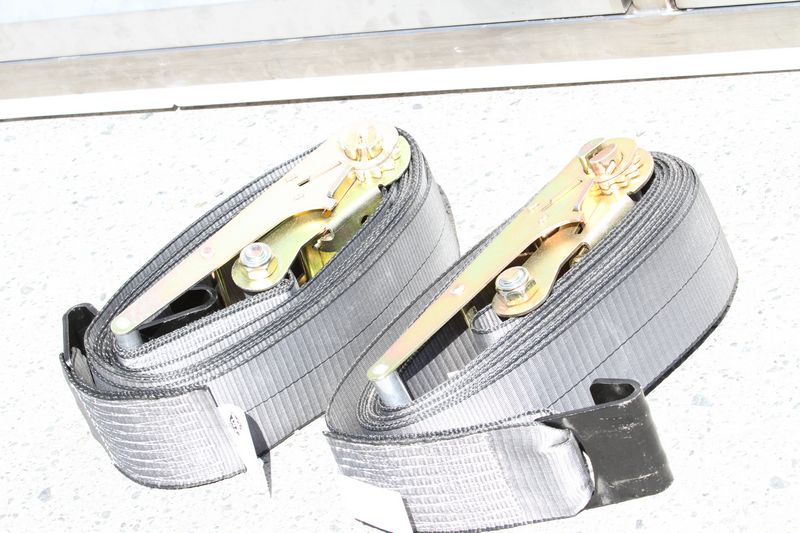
Press Conference on the polar bear holding module. USFWS/Rose Primmer